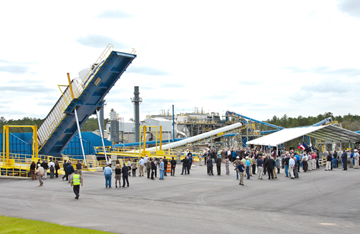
EM Celebrates Ribbon Cutting for New Biomass Plant at Savannah River Site

In 2009, DOE competitively awarded Ameresco Federal Solutions, Inc. a fixed-price renewable Energy Savings Performance Contract (ESPC) to finance, design, construct, operate, maintain and fuel a new biomass facility at SRS for 20-years. Under ESPCs, private companies finance, install, and maintain new energy and water-efficient equipment in federal facilities, with no up-front funding or extra costs incurred by the government or taxpayers.